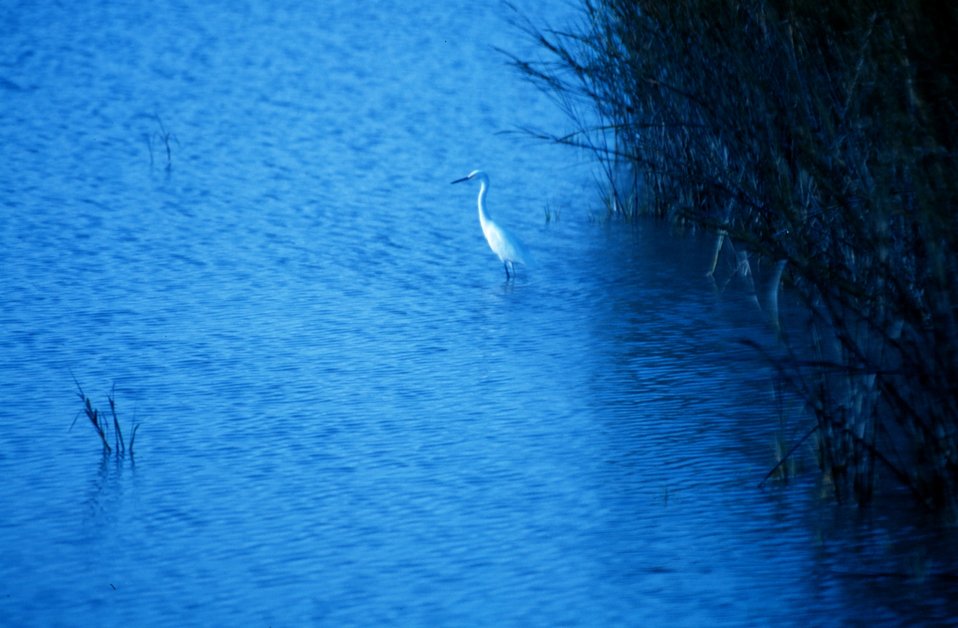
A great white egret in the tidal waters of Charleston harbor.